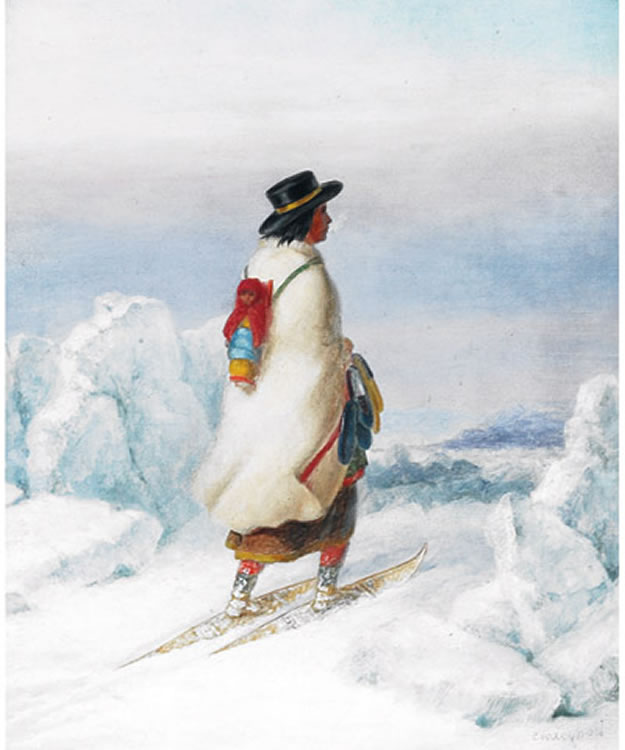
Indian Woman Moccasin Seller, oil paintings by Cornelius Krieghoff, 11 x 9 in.